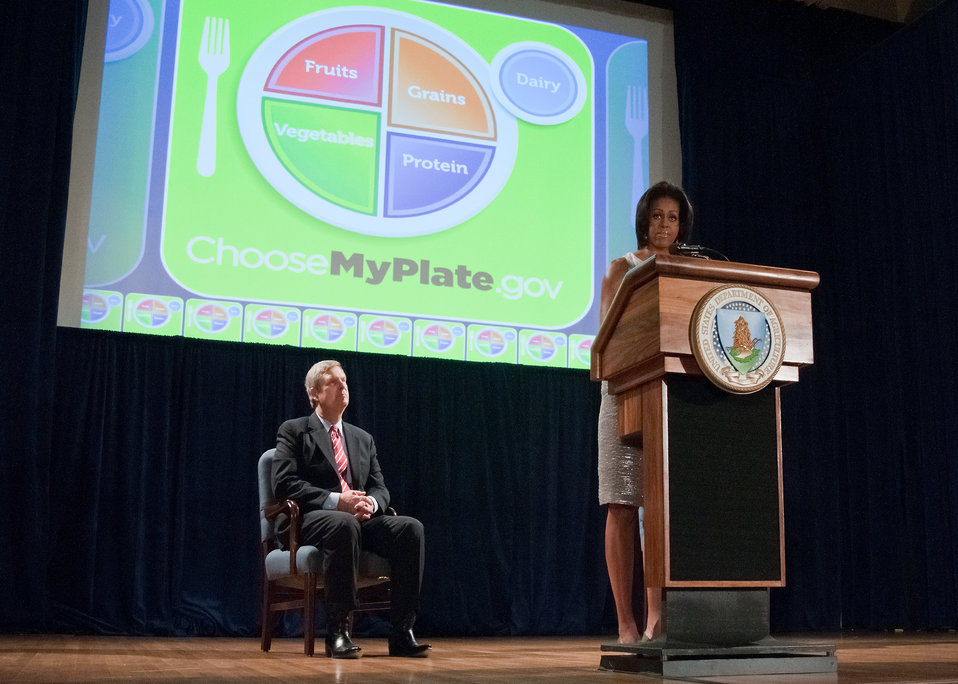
First Lady Michelle Obama unveiled the new food icon that will serve as a reminder to help consumers make healthier food choices at the United States Department of Agriculture, Thursday, June 2, 2011. Agriculture Secretary Tom Vilsack accompanied the First Lady at the launch. The White House Child Obesity Task Force called for simple advice to consumers with information to help them make healthy food choices. As a result USDA has introduced the new food icon to replace the MyPyramid image representing the food guide pyramid as the government’s primary food group symbol.